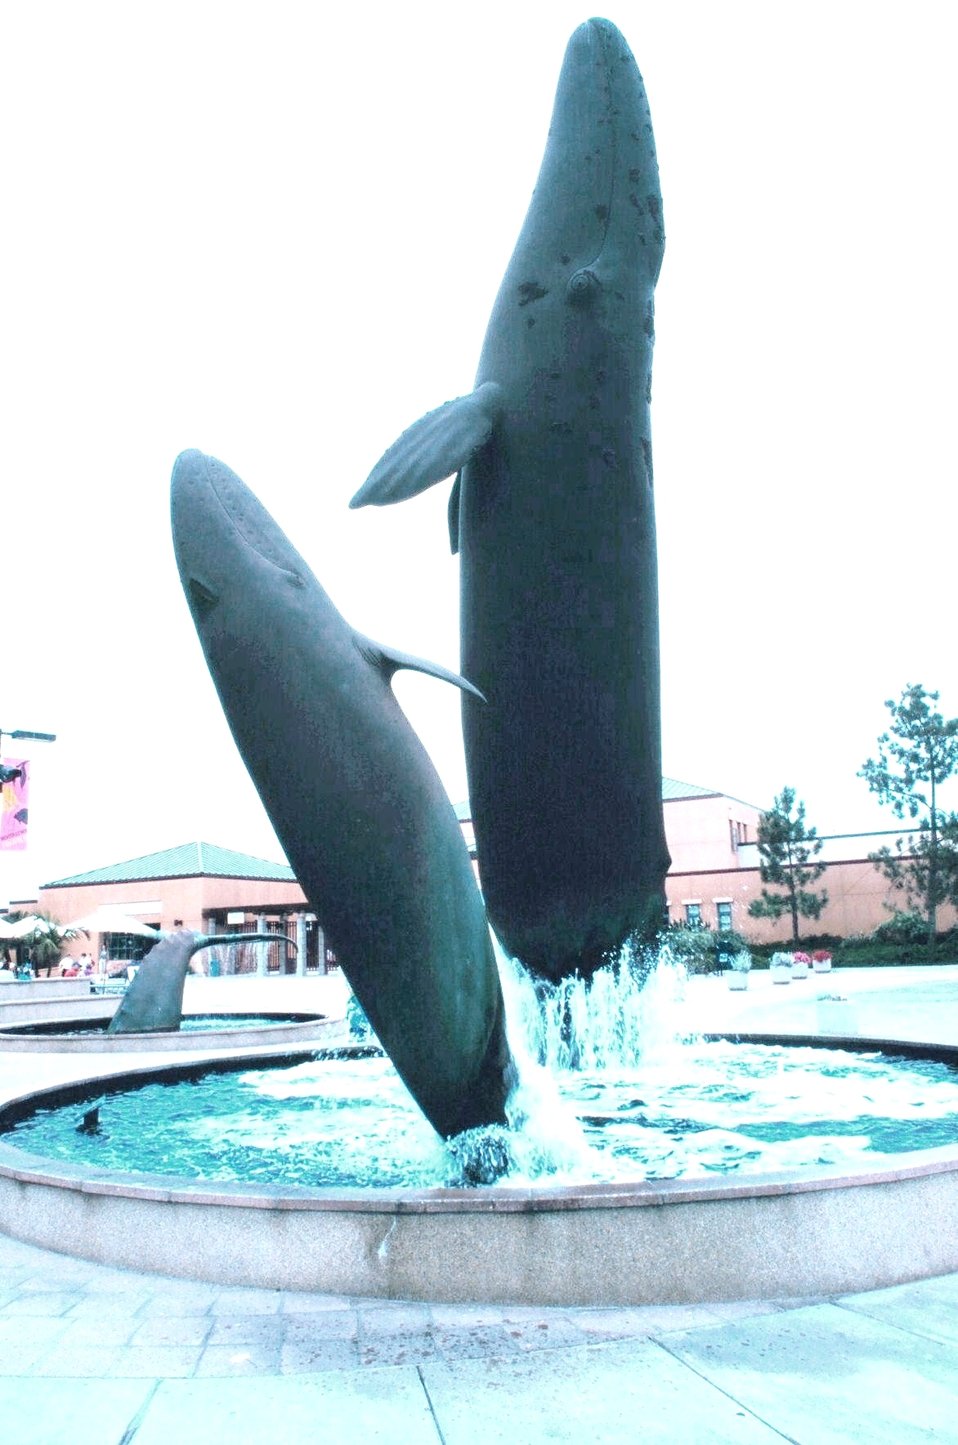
Whale sculptures grace the fountain at the Birch Aquarium